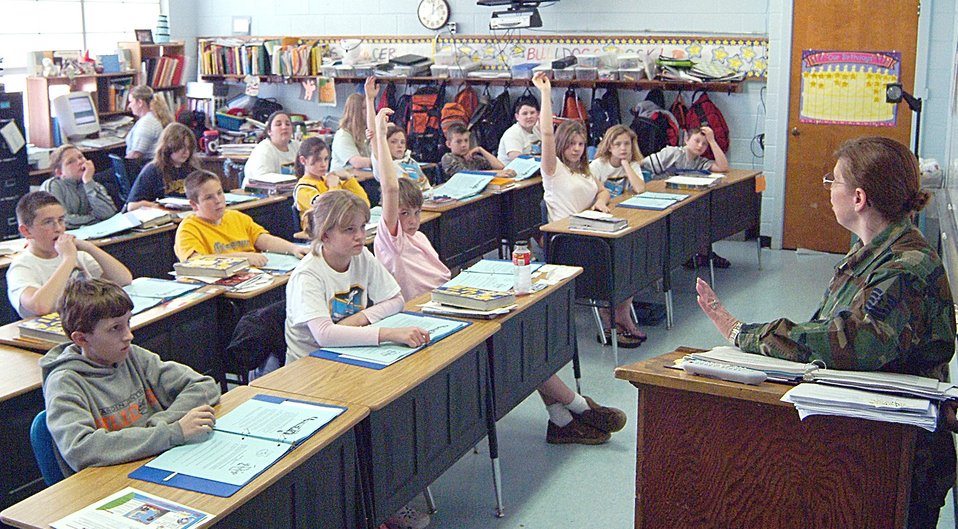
Wright Flight program takes youths to new heights

Master Sgt. Claudia Spooner (right) instructs students during the wing-sponsored Wright Flight mentoring program at Hardin Central school in Hardin, Mo. Sergeant Spooner is a volunteer teacher from the 442nd Fighter Wing's, 442nd Mission Support Flight. The 442nd FW is an Air Force Reserve Command A-10 Thunderbolt II fighter unit based at Whiteman Air Force Base, Mo.